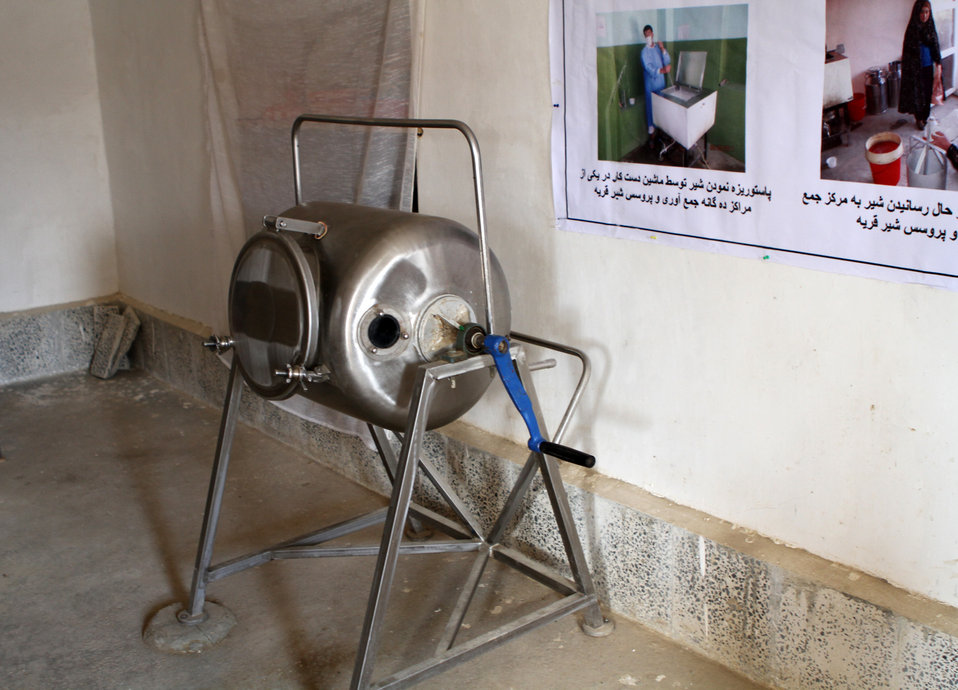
USAID funded Milk Processing Center